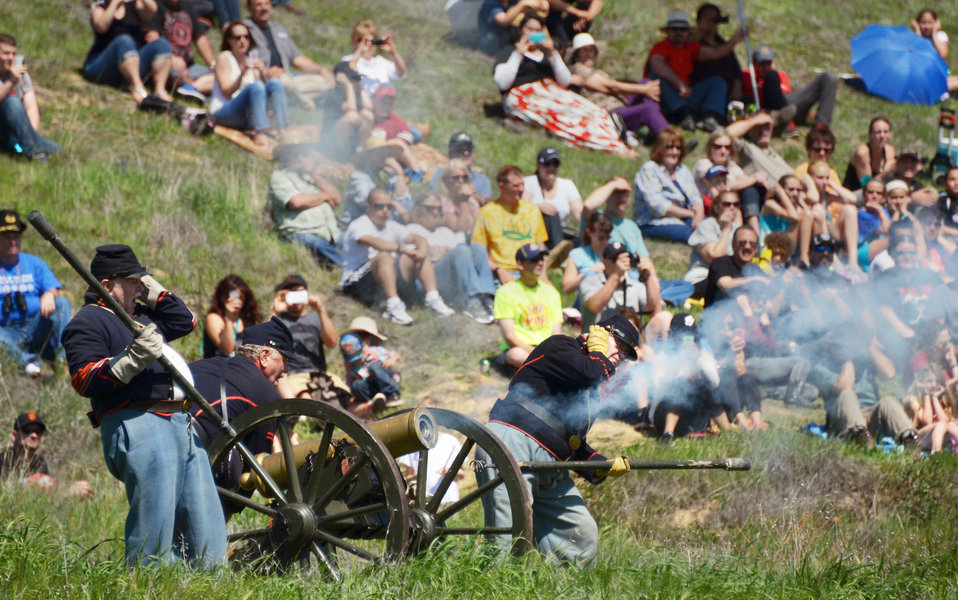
Historic weekend in Knights Ferry

Reenactment troops and audience members enjoy another round of cannon fire during the Civil War reenactment weekend at the U.S. Army Corps of Engineers Sacramento District’s Stanislaus River Parks in Knights Ferry, Calif., March 22, 2014.